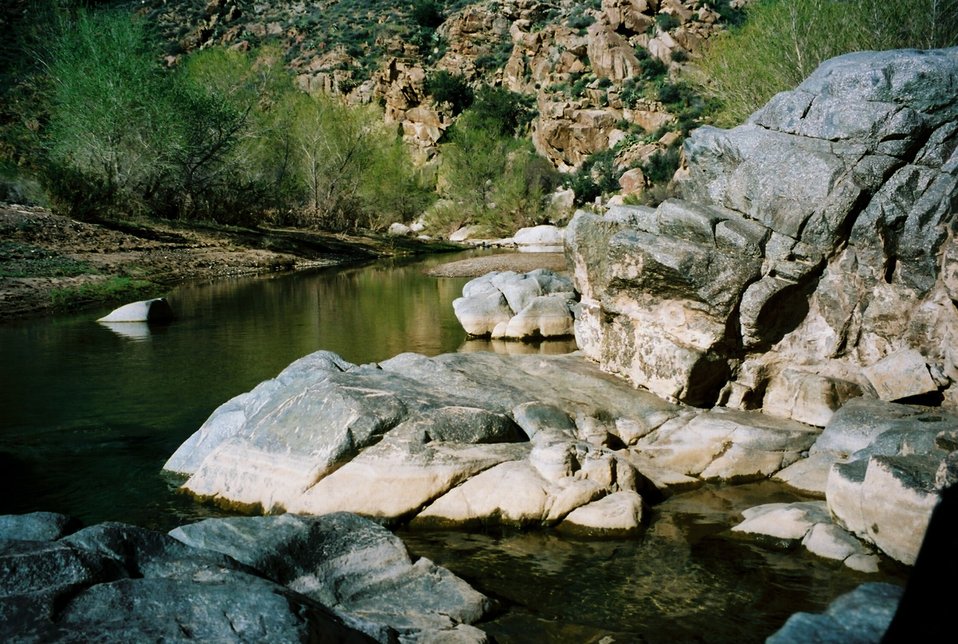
The Agua Fria River runs through the canyon that shares its name.